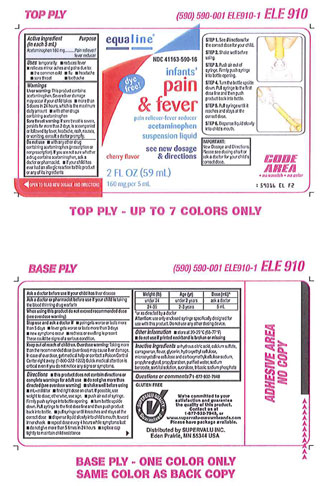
Recalled - Acetaminophen infant suspension liquid

November 1, 2013 – Product Recall – Perrigo Initiates Nationwide Voluntary Product Recall of Acetaminophen Infant Suspension Liquid, 160 Mg/5 Ml, Due to a Potential Defect with the Co-packaged Oral Syringe.